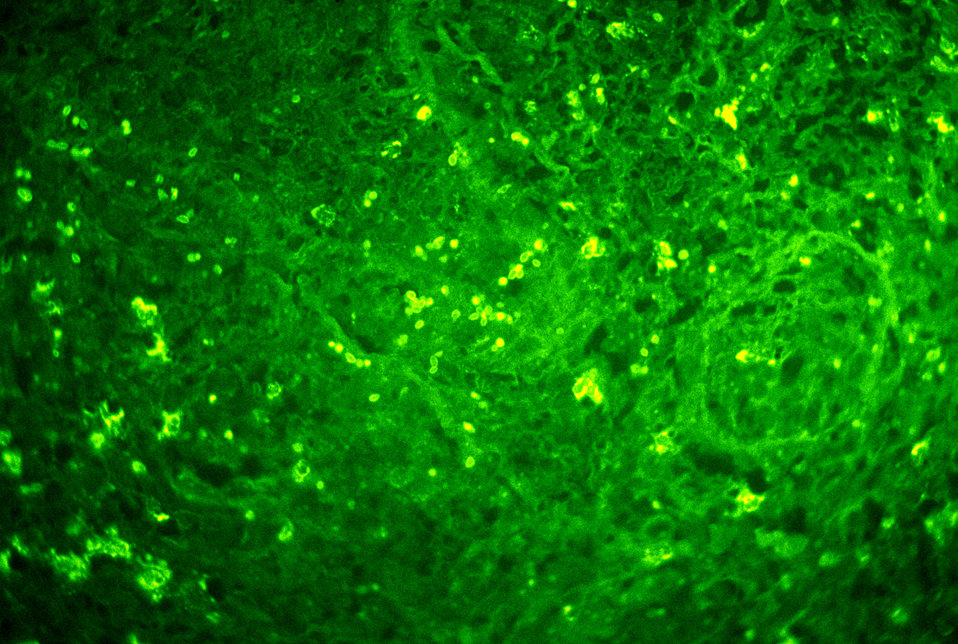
Histopathology of histoplasmosis in open lung biopsy. FA stain reveals numerous yeast cells of Histoplasma capsulatum.